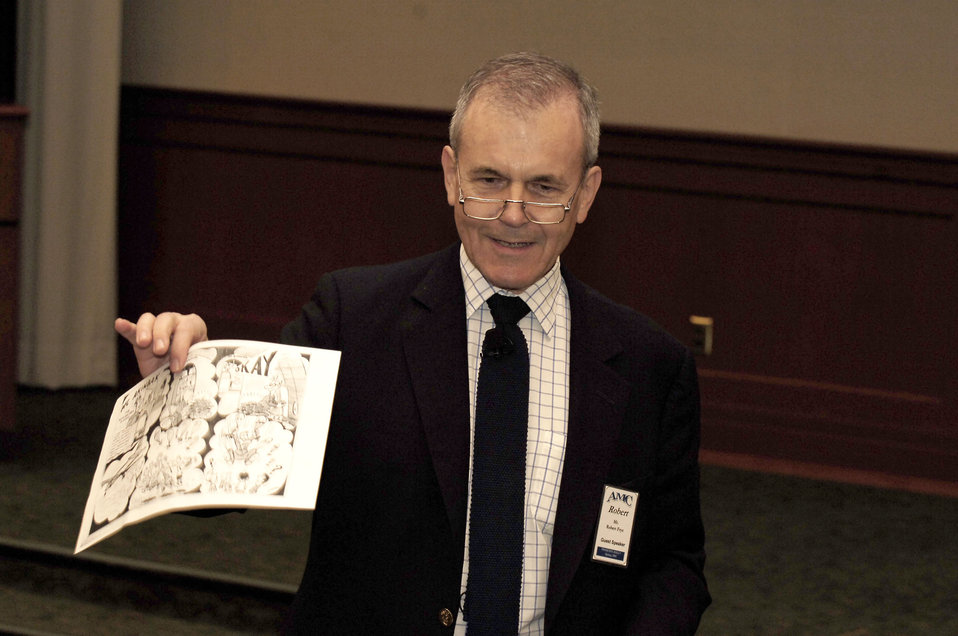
Phoenix Rally celebrates 60th Anniversary of Berlin Airlift

Robert Frye displays an old Task Force Times cartoon sketch of the Berlin Airlift from 1948 during the 2008 Phoenix Rally conference March 21 at MacDill Air Force Base, Fla. Mr. Frye spoke to Air Force leaders to commemorate the 60th anniversary of the Berlin Airlift.The purpose of the conference was to shape the Air Mobility Command as well as display the legacy of global reach and hope. Mr. Frye is an Emmy award winning producer.